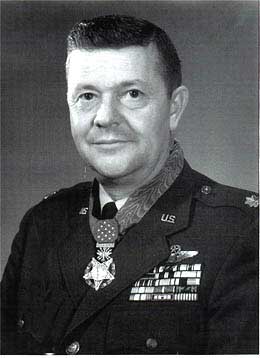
Medal of Honor

1990's -- Col. Joe M. Jackson, Medal of Honor recipient for actions in the Vietnam War, U.S.